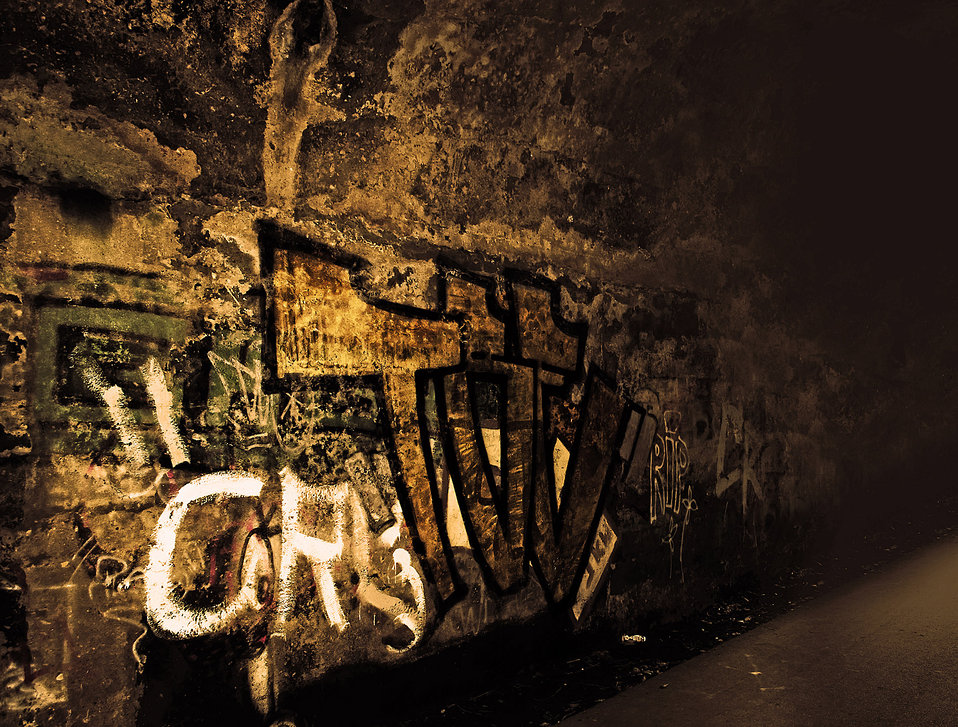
Graffiti wall background.